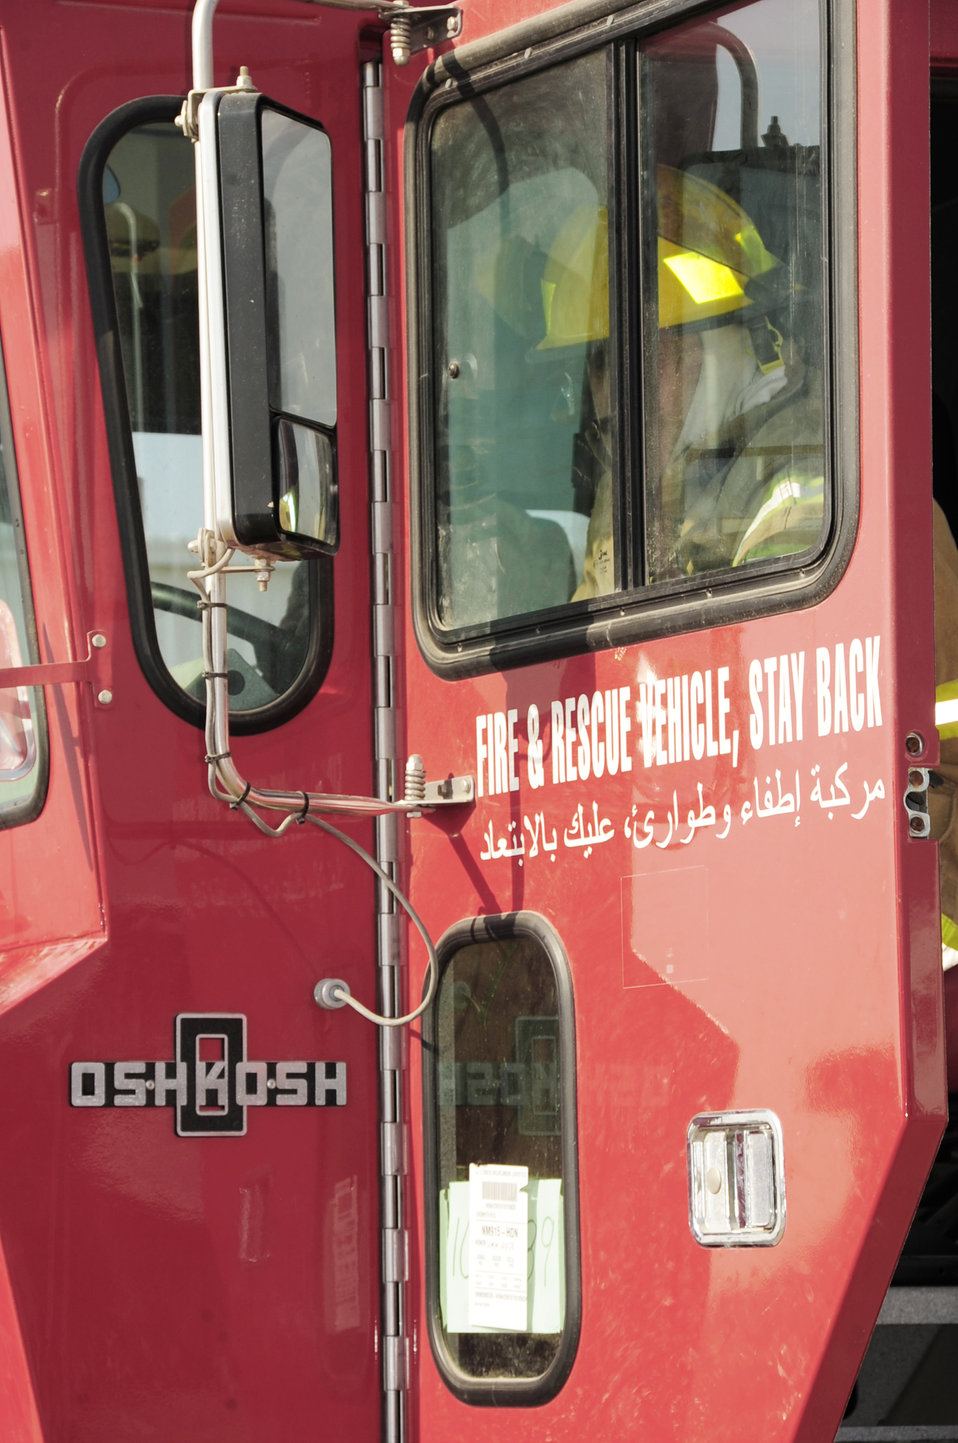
Ali firefighters prepare Iraqis for future

An Iraqi firefighter enters a new firefighting vehicle Dec. 28, 2009, at Camp UR, Iraq. Airmen from the 407th Expeditionary Civil Engineer Squadron have provided training to the Iraqi Army fire department three times a week to ensure Iraqi firefighters are self sufficient.